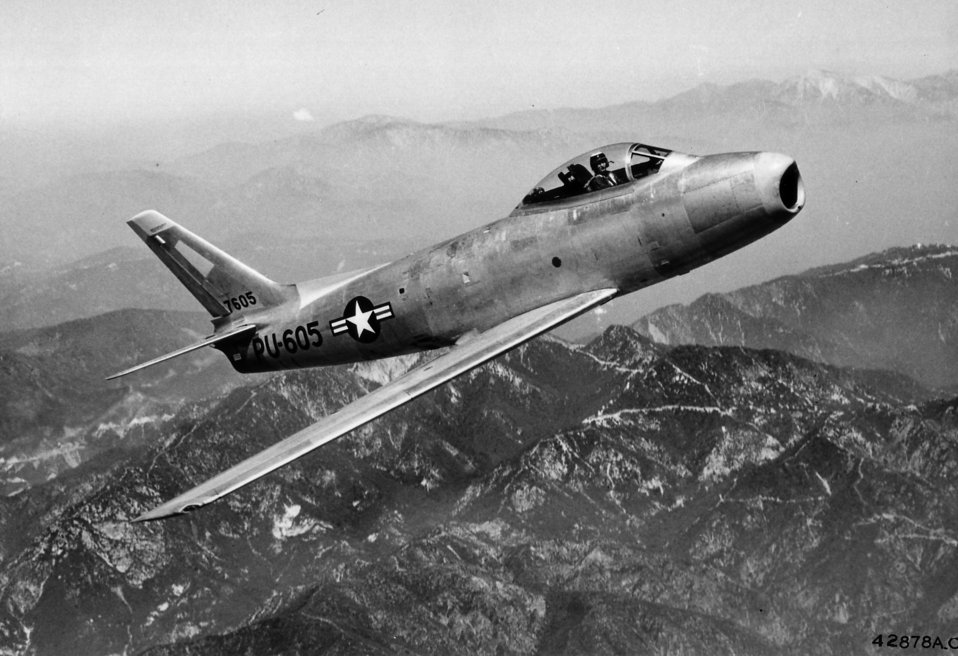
North American F-86A

1950's -- North American F-86A in flight, 1951. It was shipped to Japan in December 1950 with the 4th Fighter Interceptor Wing, one of the first of the Air Force's Sabre units , and flown in Korea. Most of its combat missions against Mig-15s were flown from Kimpo Air Base near Seoul.